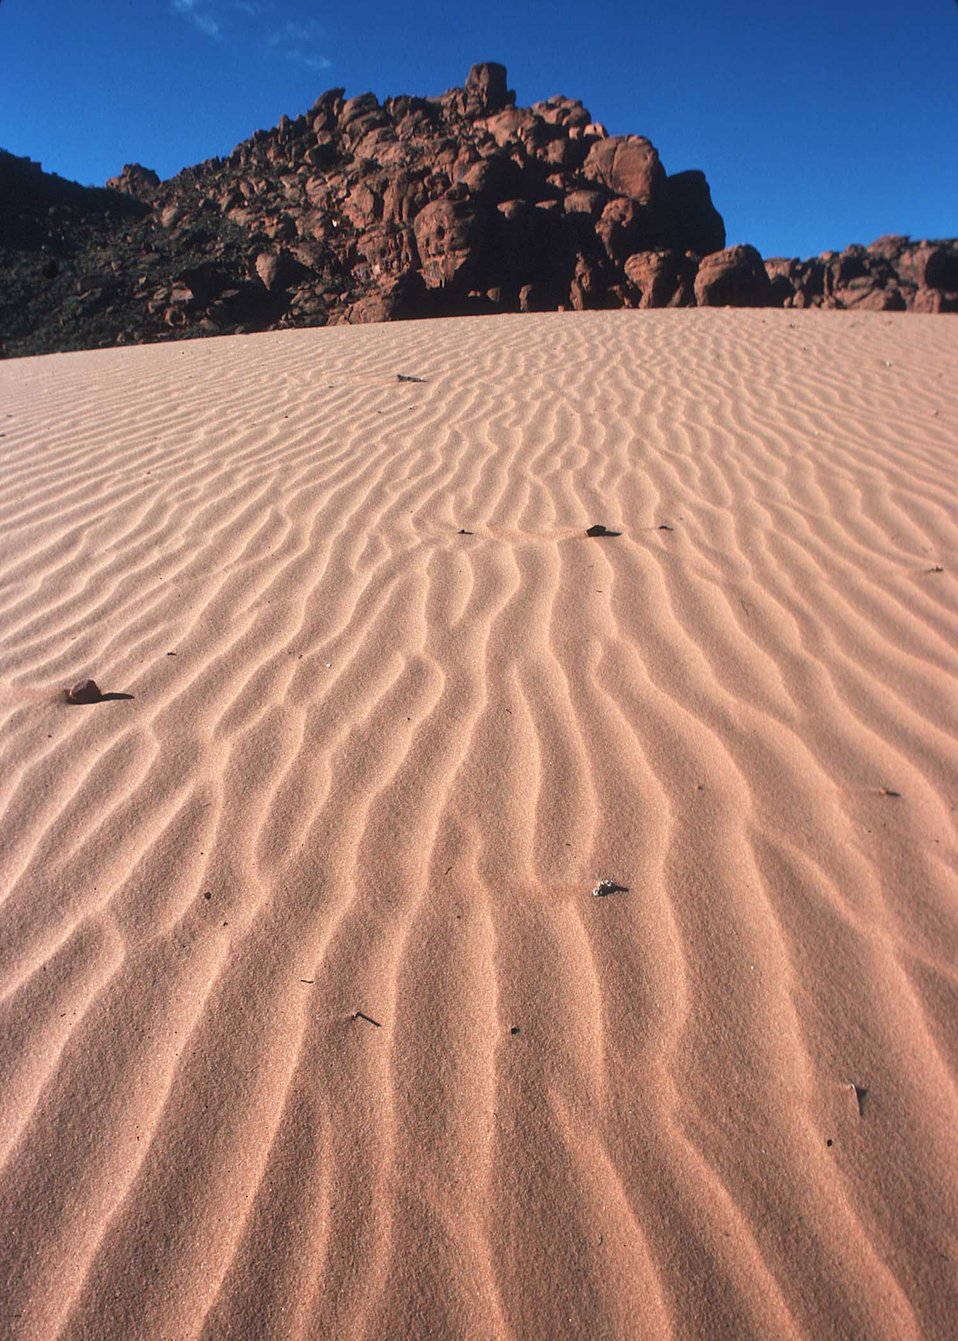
Years of wind erosion have created pink sand dunes in Southern Utah.